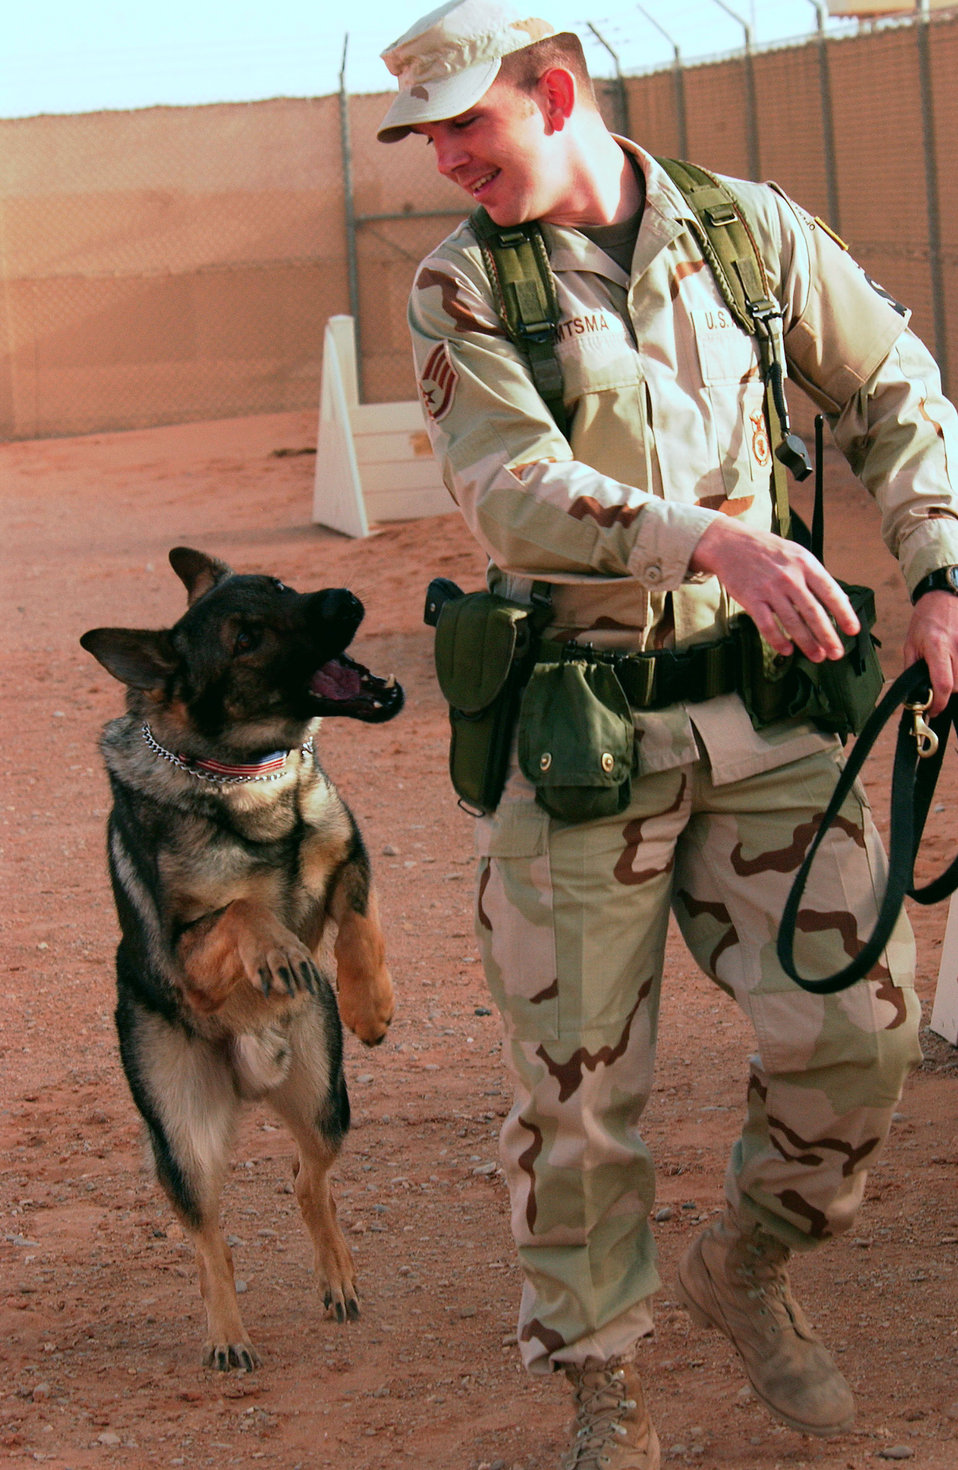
Man's best friend

OPERATION IRAQI FREEDOM -- Staff Sgt. Chad Reemtsna, a military working dog handler deployed from the 18th Security Forces Squadron, Kadena Air Base, Japan to the 363rd Expeditionary Security Forces Squadron, praises Hero, his military working dog prior to starting a mobile security patrol on April 8. Before military working dogs can be deployed they must pass an explosive ordinance test. The 363rd ESFS search crews work around the clock checking coalition forces, third country nationals, and contractor vehicles for bombs and other explosive devices in support of Operation Iraqi Freedom at a forward deployed location in Southwest Asia.